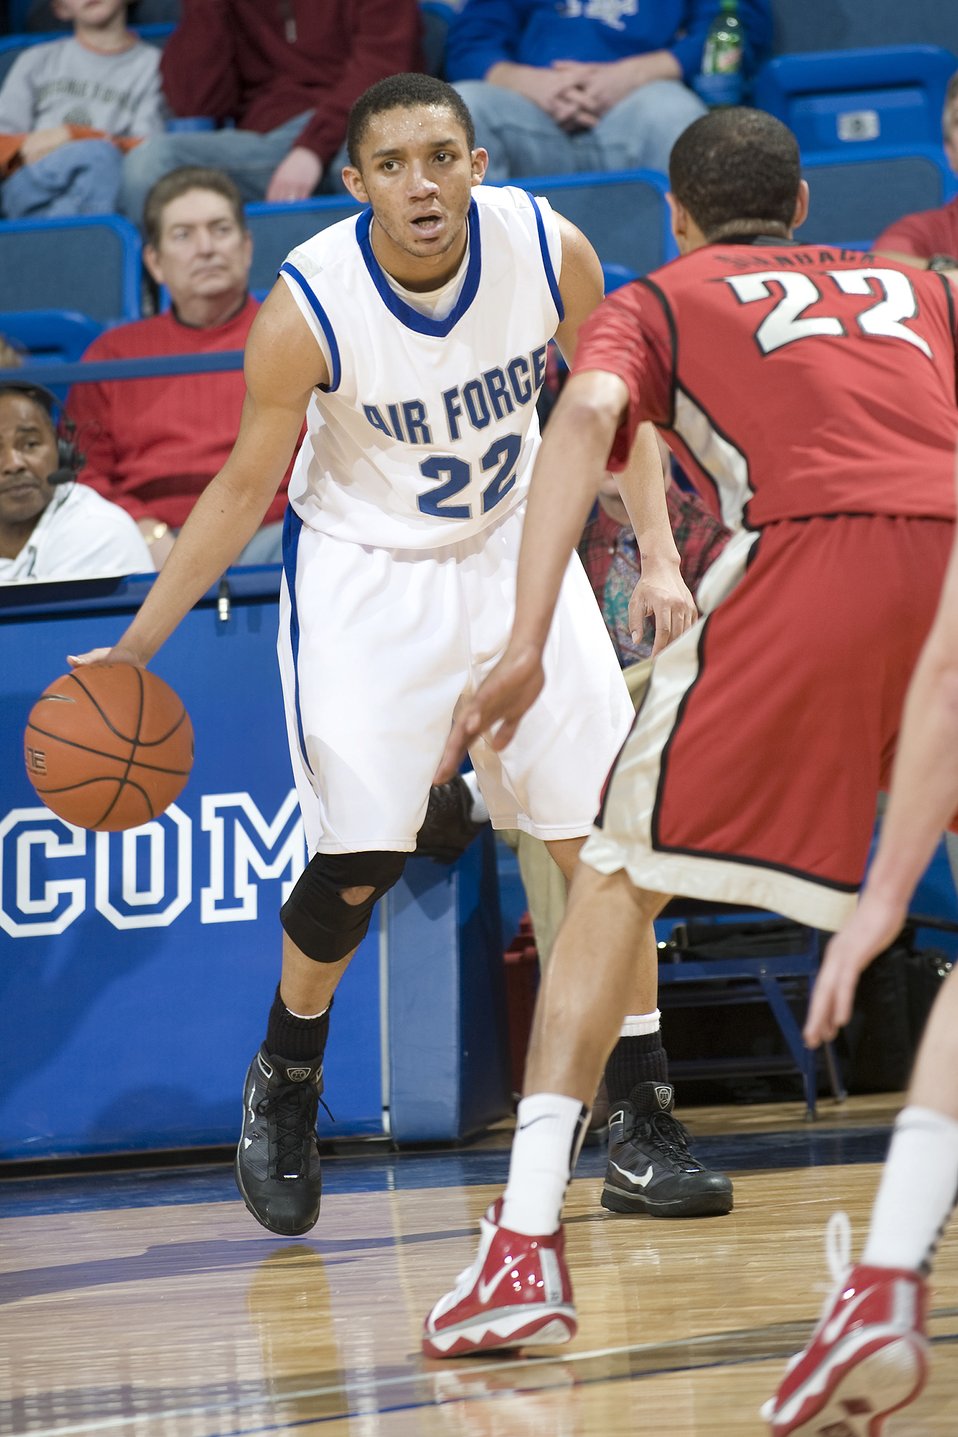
Falcons fall to Running Rebels

Falcon senior guard Avery Merriex attempts to penetrate the swarming Rebel defense during the Feb. 27, 2010, basketball game against the University of Nevada Las Vegas Running Rebels at the U.S. Air Force Academy's Clune Arena. The Falcons were unable to get much penetration against a swarming man-to-man Rebel defense, and were forced to spend much of their time on the perimeter. UNLV went on to defeat the Falcons by a score of 77 to 47.